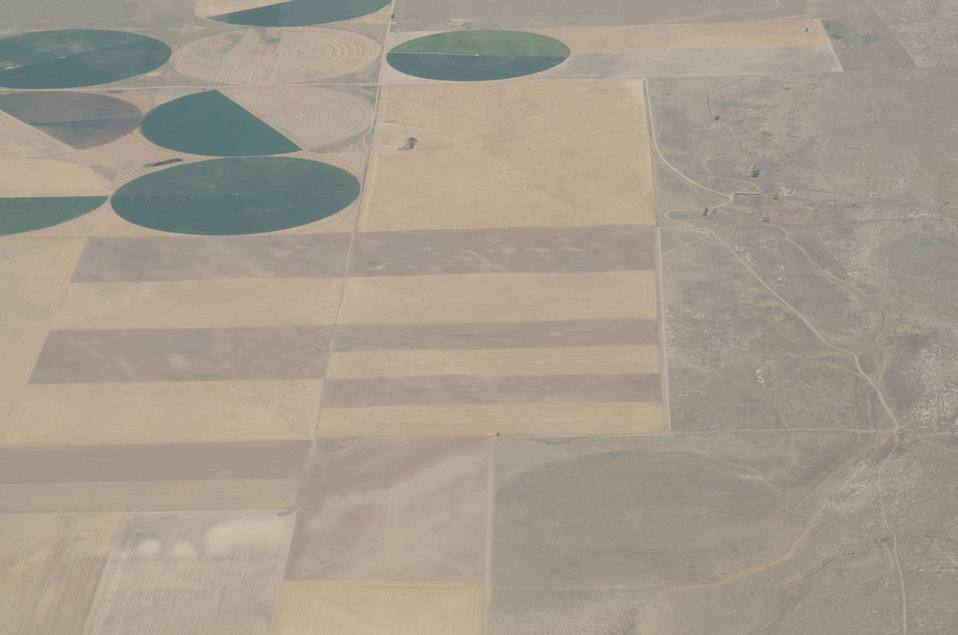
Aerial views of drought affected Colorado farm lands, near Wiggins, Colorado on Saturday, July 21, 2012. Green areas are irrigated, the yellow areas are dryland wheat crops.